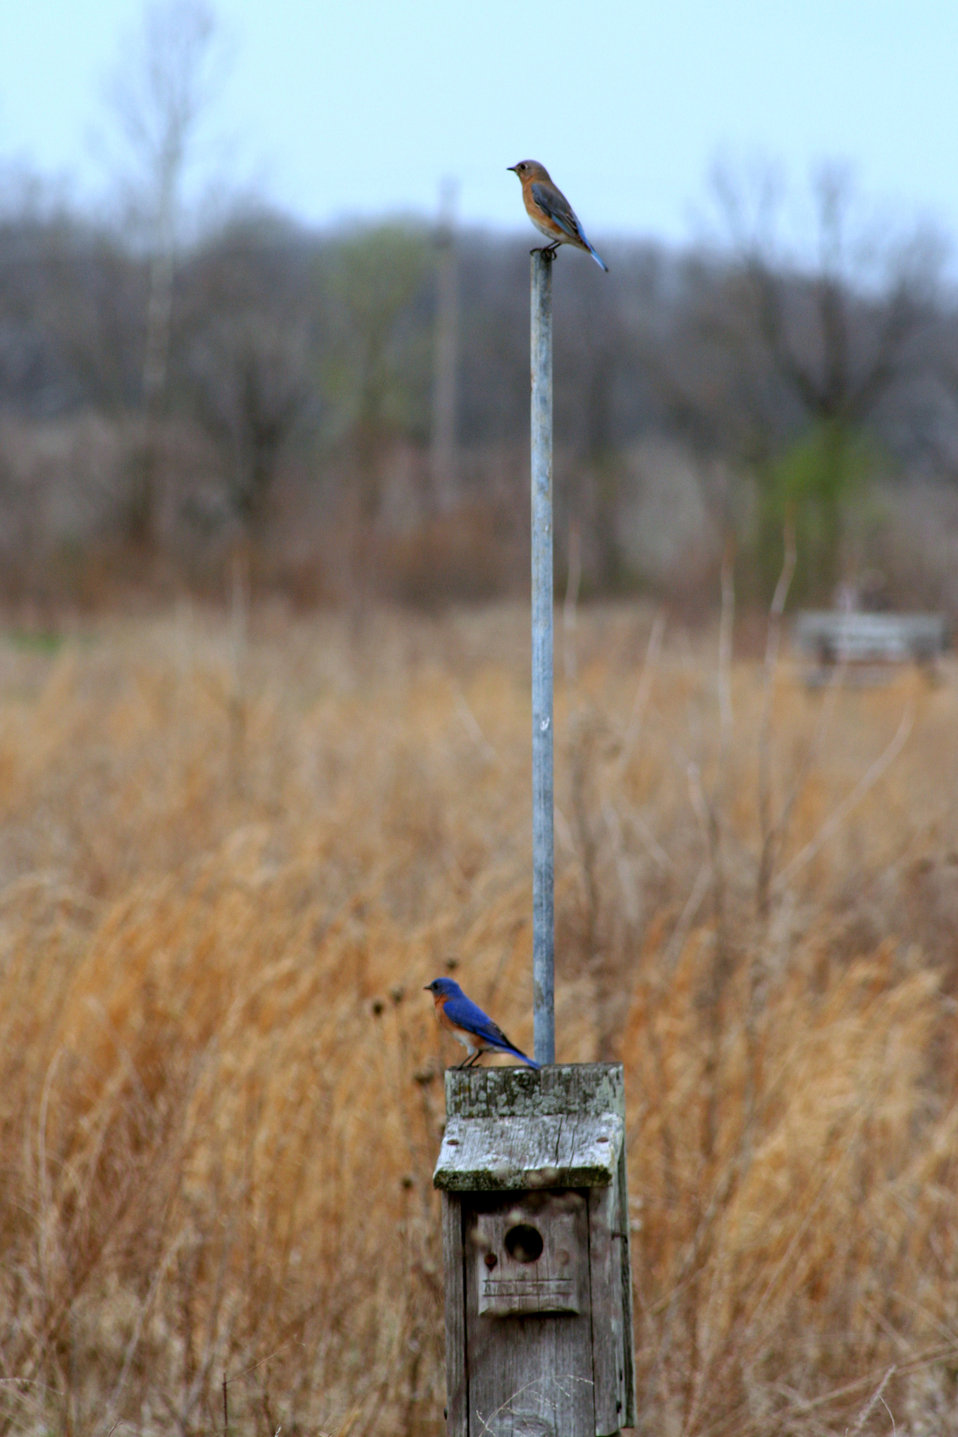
Bluebirds on nest box in Columbia, Missouri.